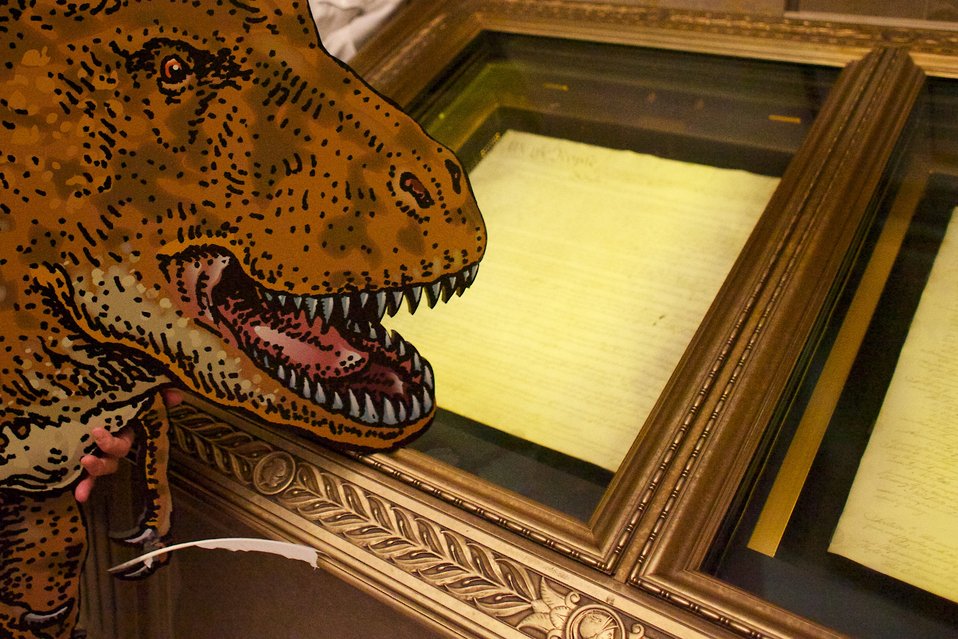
Smithsonian Institution's TRex visits the National Archives